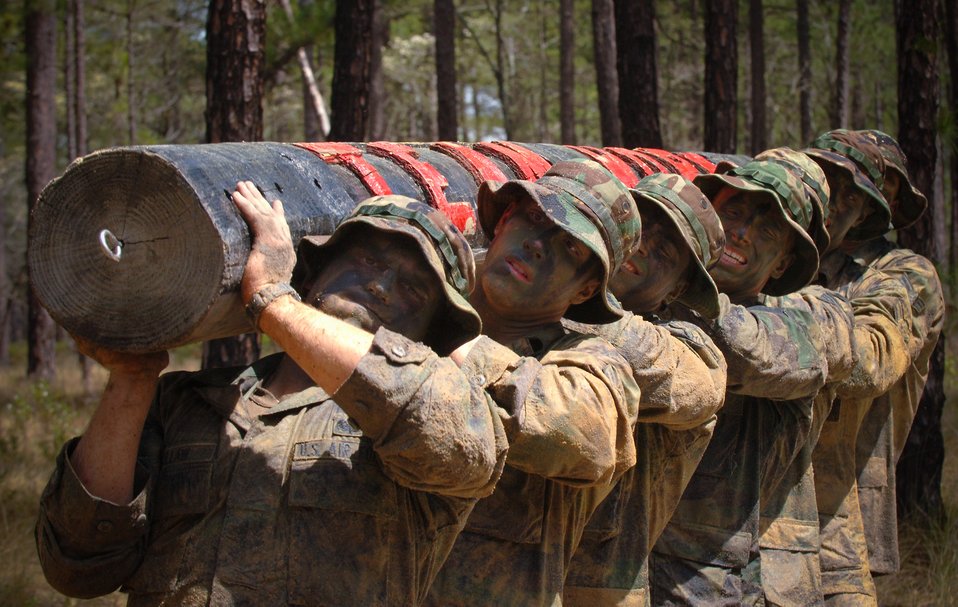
Heave-ho!

Combat control students maneuver the